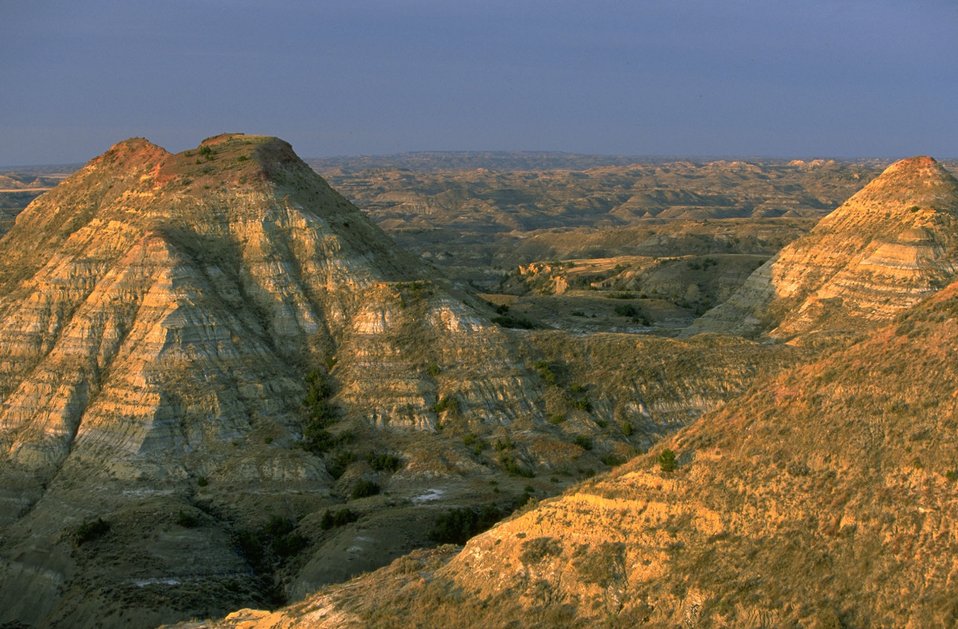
Terry Badlands Wilderness Study Area